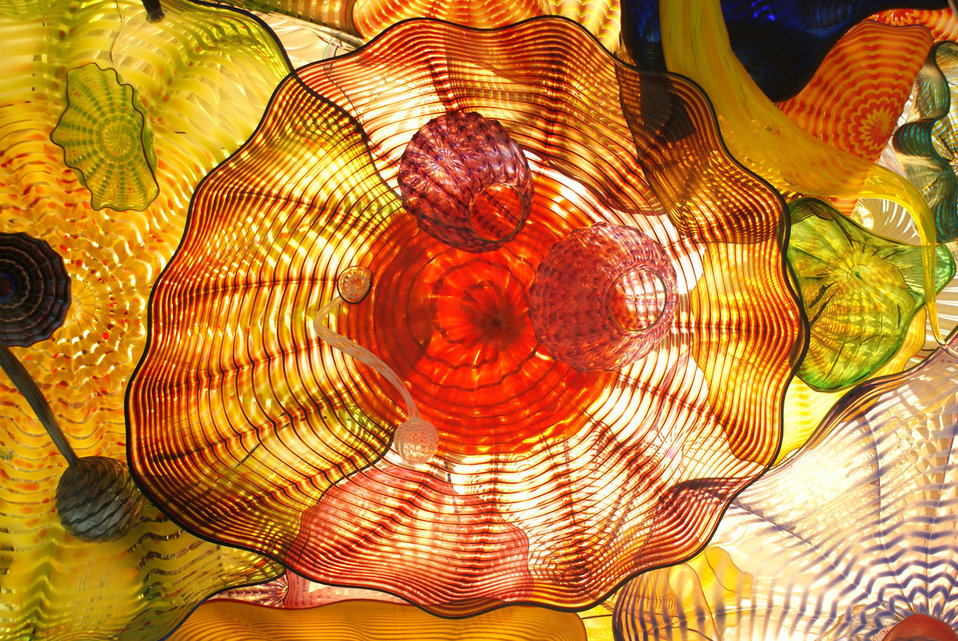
Glass art in the glass bridge in tacoma..